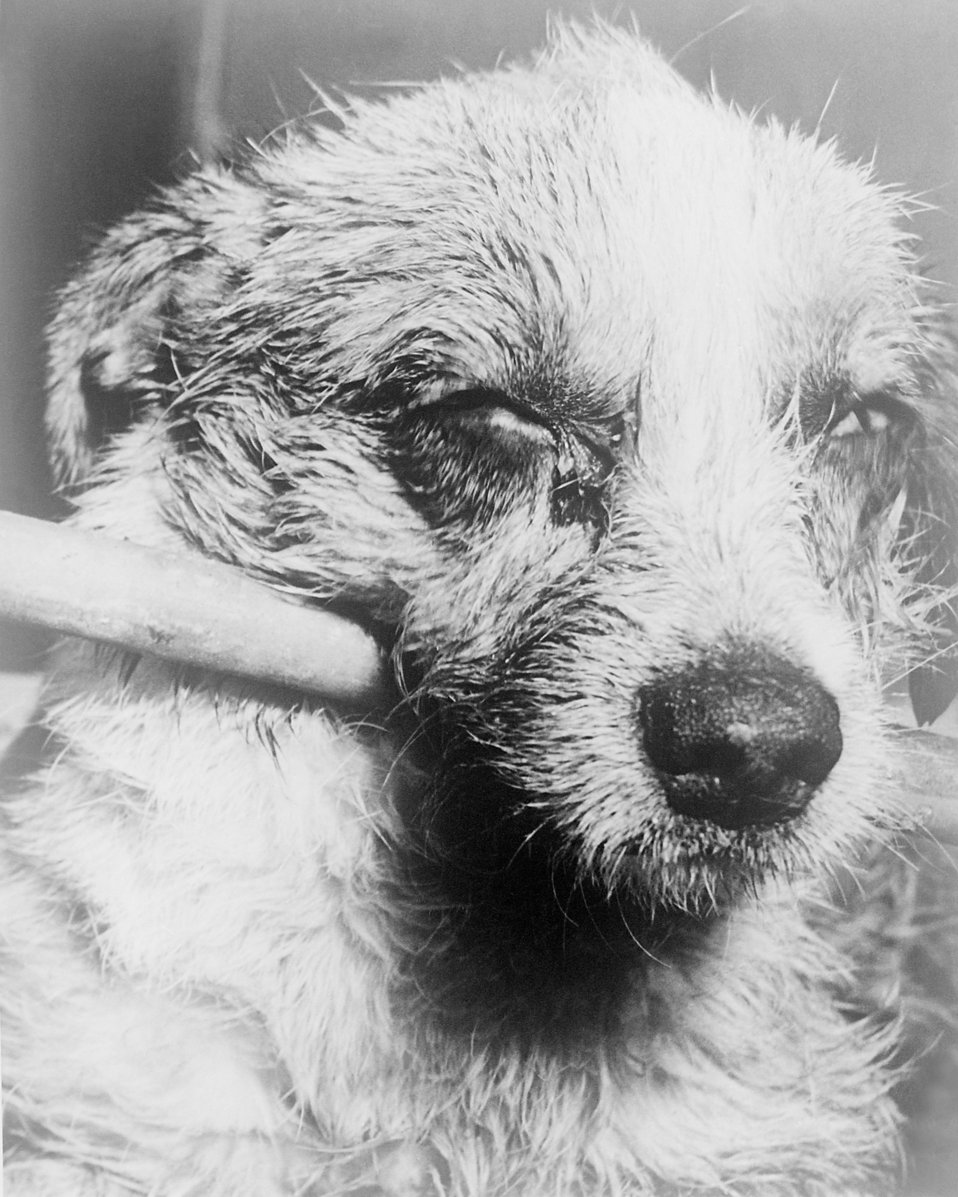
Close-up of a dog's face during late-stage "dumb" paralytic rabies.